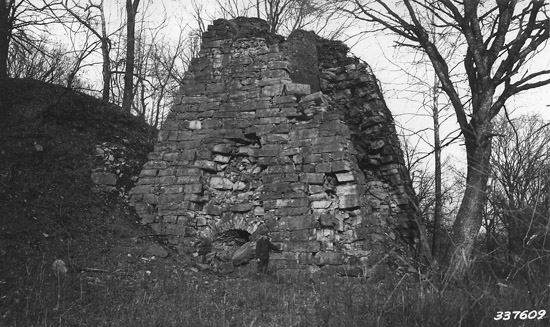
iron furnace 1936

An Illinois Iron Furnace taken by U.S. Department of Agriculture (USDA) Forest Service photographers in 1936. The Forest Service acquired the land in 1950 and the furnace was completely rebuilt by young men from the Golconda Job Corps in 1965. It is located on the Shawnee National Forest, Illinois.